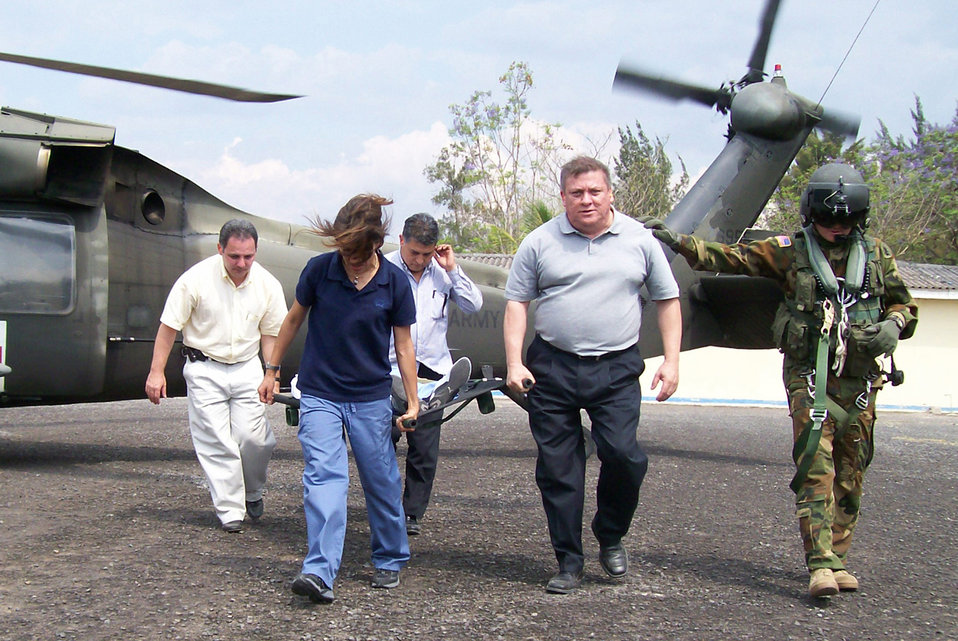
Honduras, American medics gather to share skills

Staff Sgt. Joseph McCormick leads Honduran medical professionals away from a UH-60 Blackhawk helicopter during an information exchange April 6 at Hospital Militar Luis Alonso Discua in Honduras. One aspect of the exchange was familiarization with practicing safe delivery and recovery of patients to a running helicopter. Sergeant McCormick is an Army flight medic.